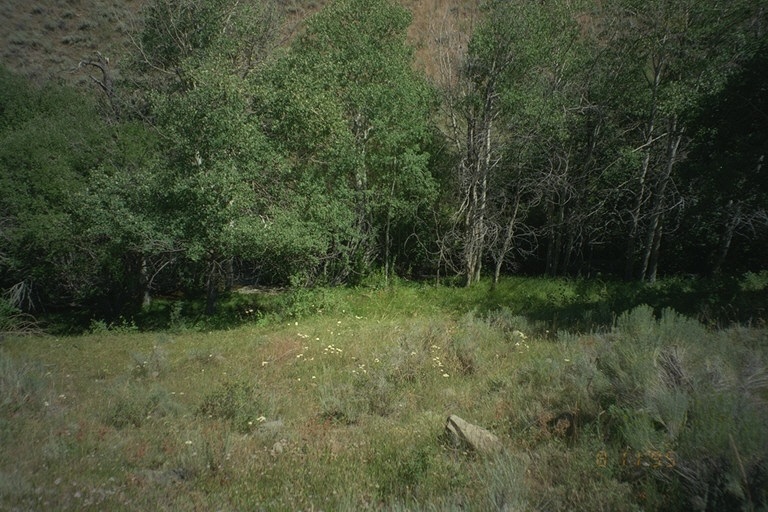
Riparian area Public Lands Salmon Field Office UCSC Upper Columbia Salmon Clearwater District